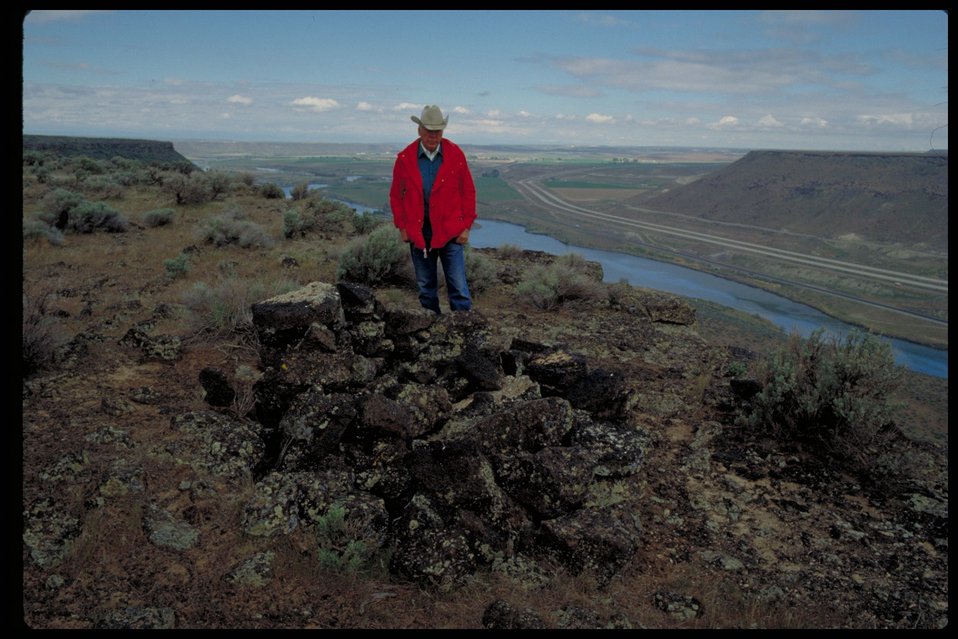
Rock Circle above The Narrows west of Glenns Ferry Oregon Trail Lower Snake River District